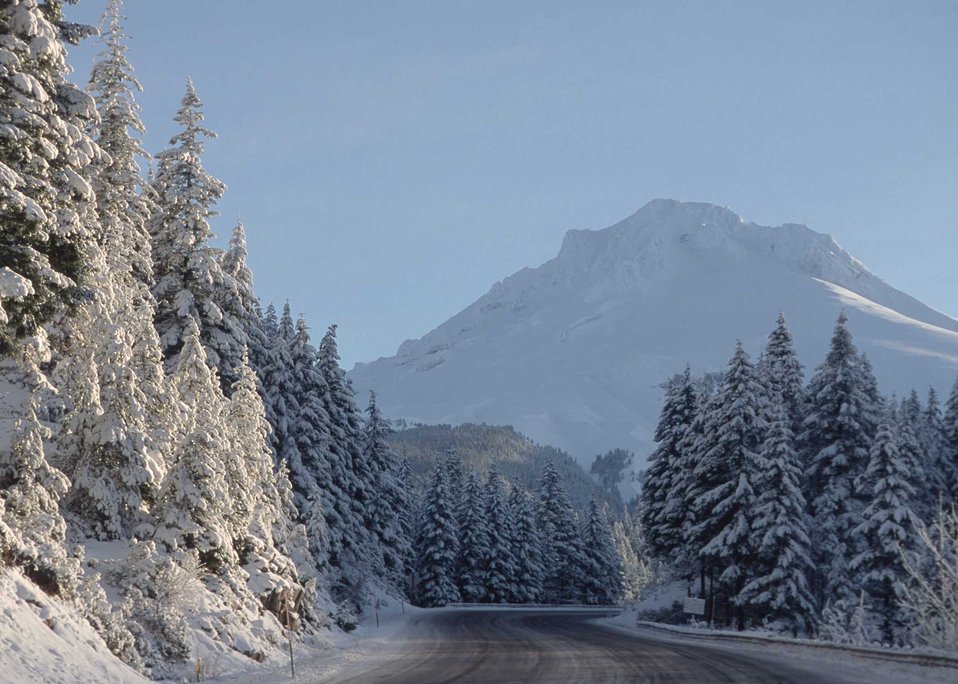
Snow on trees, mountains; Sierra Nevada Mountain Range, Washoe County, NV.